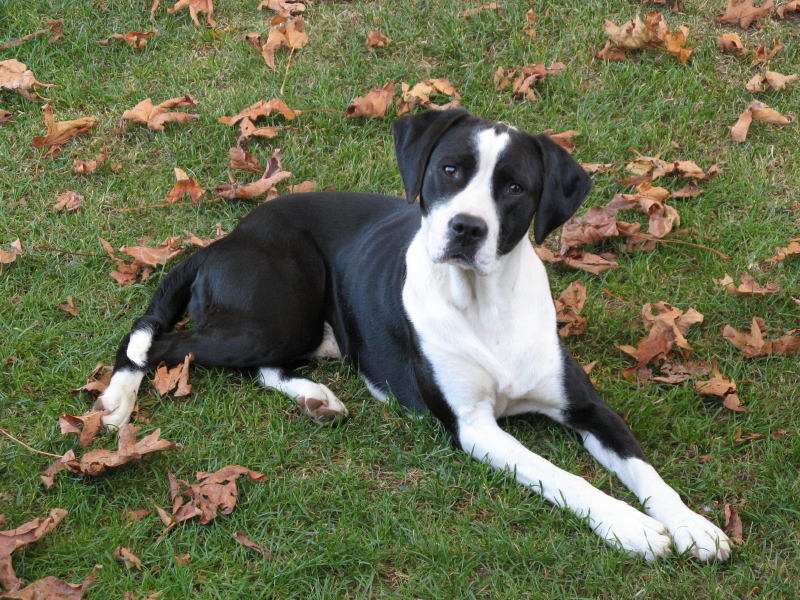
Dog breed Canadian Pointer black and white Português: Raça de cão Canadian Pointer preto e branco